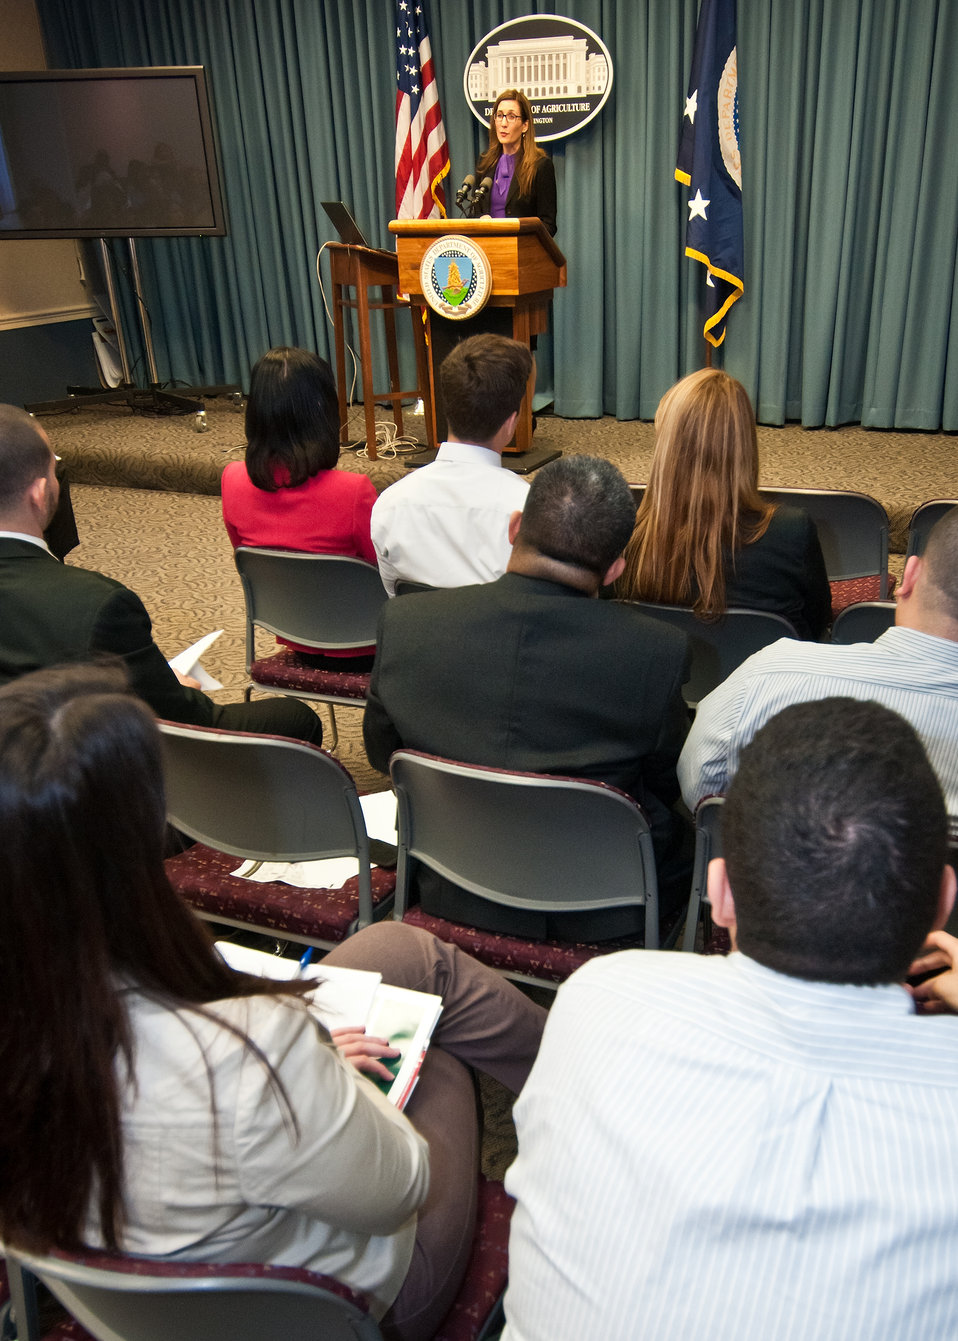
Agriculture Deputy Administrator of the Supplemental Nutrition Assistance Program (SNAP), Food and Nutrition Service (FNS) Lisa Pino was the keynote speaker at the United States Department of Agriculture (USDA) Hispanic Association of Colleges and University (HACU) summer interns during the USDA/HACU/Tribal College summer intern orientation at USDA in Washington, DC, Monday, Jun. 6, 2011. Ms. Pino is a past member of the government wide HACU intern program and gave the students and graduates advice on her experience and guidance on how to make their experience as valuable as hers. The HACU/Tribal College National Internship Program represents more than 400 colleges and universities committed to higher education in the U.S., Puerto Rico, Latin America, Spain and Portugal and places student interns each year with federal agencies in Washington, DC or in field offices around the country.